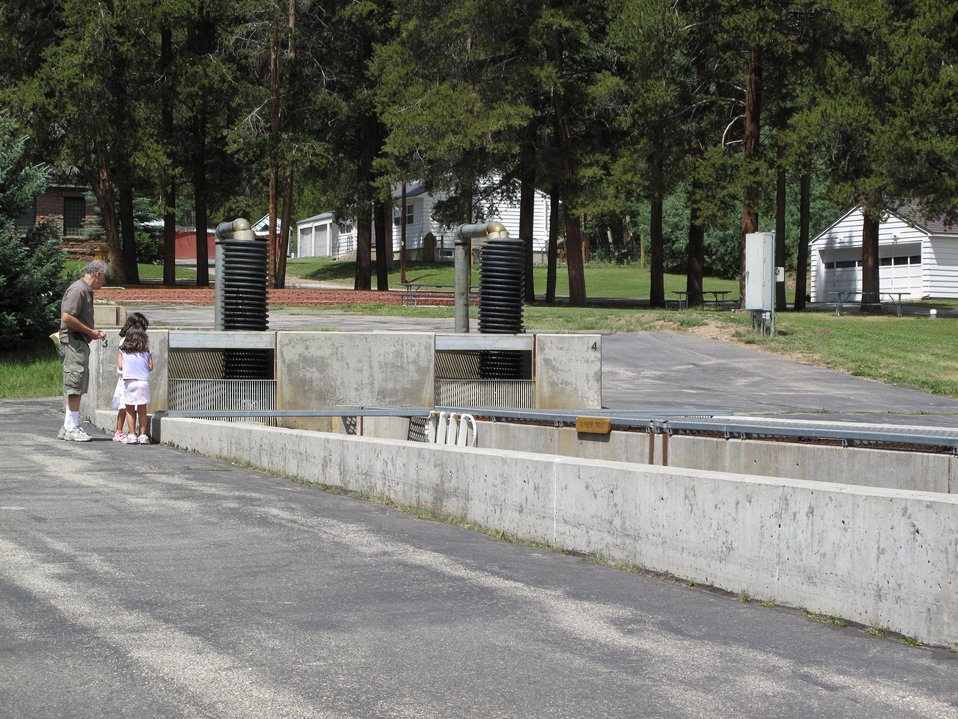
Leadville National Fish Hatchery

Leadville Hatchery is open to the public and family-friendly. The staff encourages you to come down and feed the fish in the outdoor raceways.